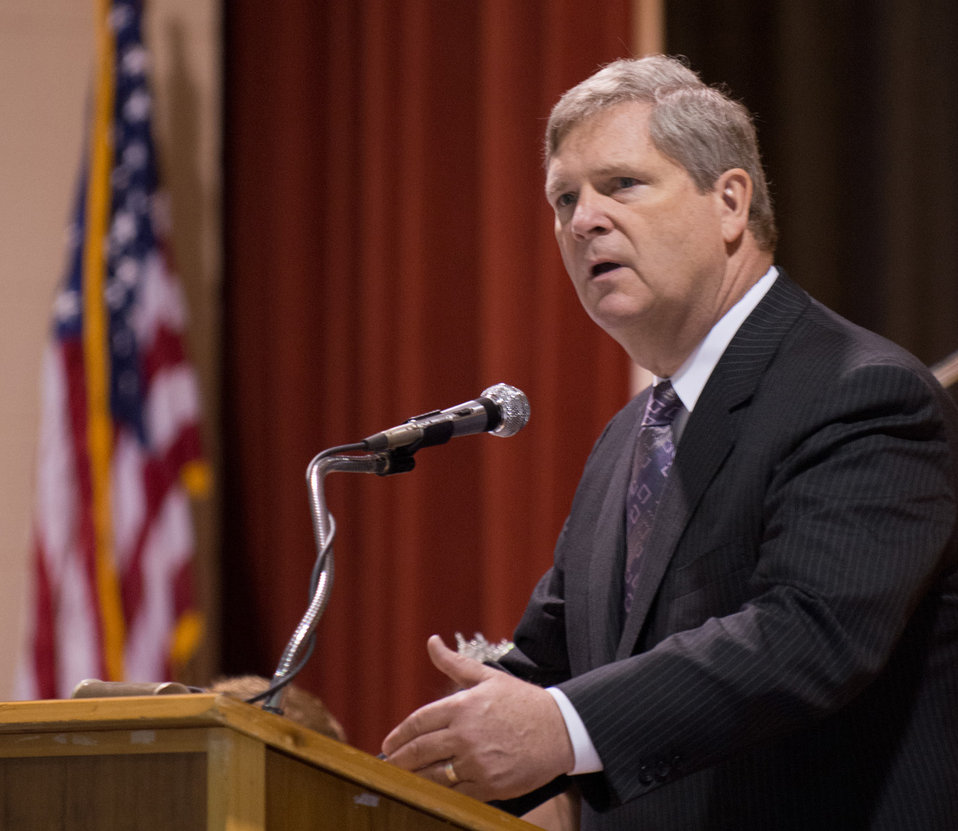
Agriculture Secretary Tom Vilsack speaks at the Ohio Agricultural Council Hall of Fame Breakfast in Columbus, OH on Friday, August 3, 2012. Secretary Vilsack was the keynote speaker and spoke about how important Agriculture is to the nation. The Secretary stated he is proud of The Ohio State University and its research and the need to involve American youth in the industry as tomorrow's leaders.